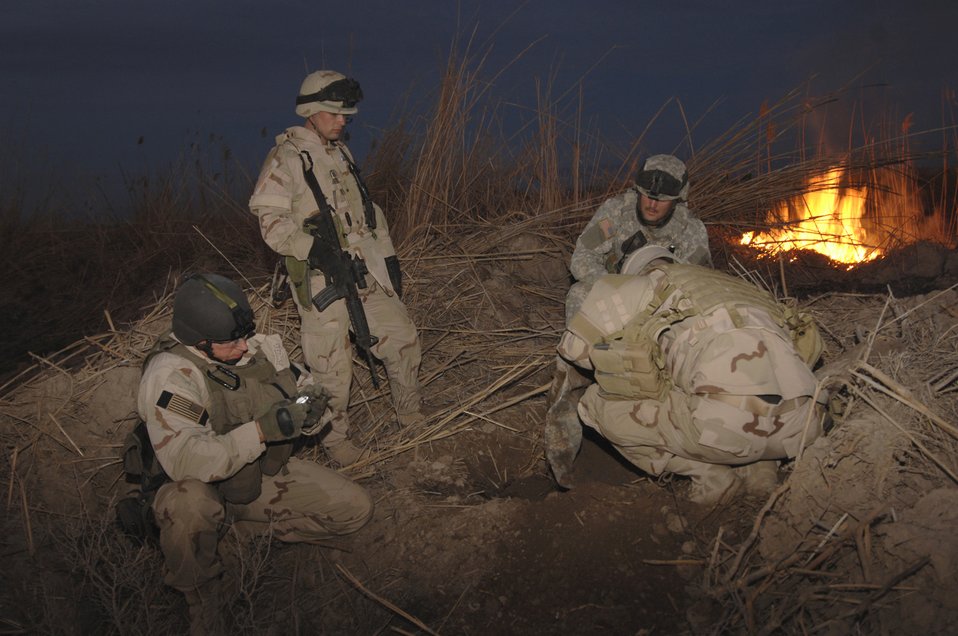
Weapons cache discovery

Airmen with the 447th Civil Engineer Squadron's explosive ordnance disposal team explore a munitions bunker in Baghdad, Iraq, Monday, Feb. 20, 2006. The bunker was discovered after a previous detonation scorched the earth, revealing the entrance to a larger weapons cache.